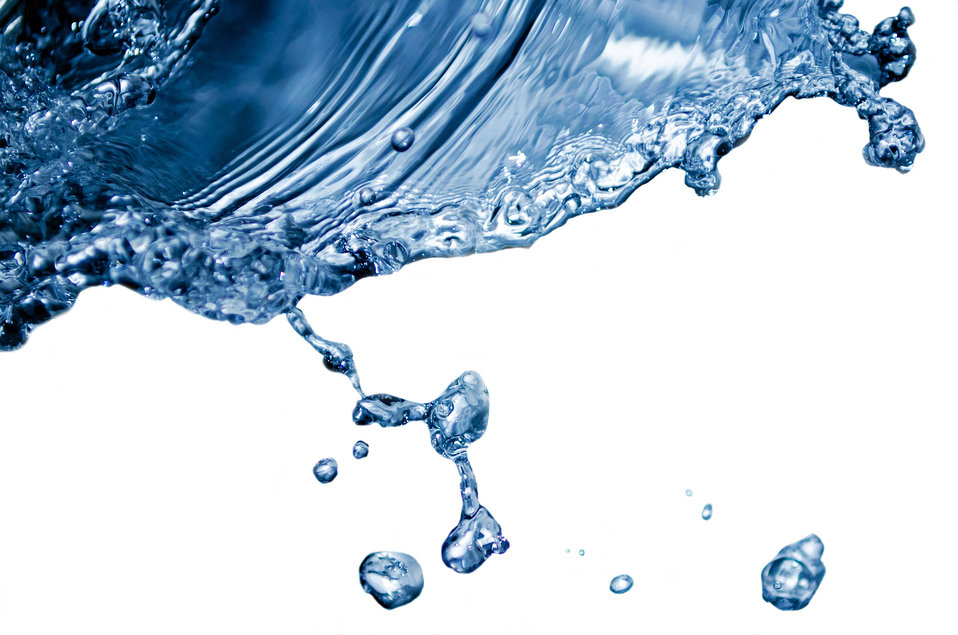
Water on the white background.